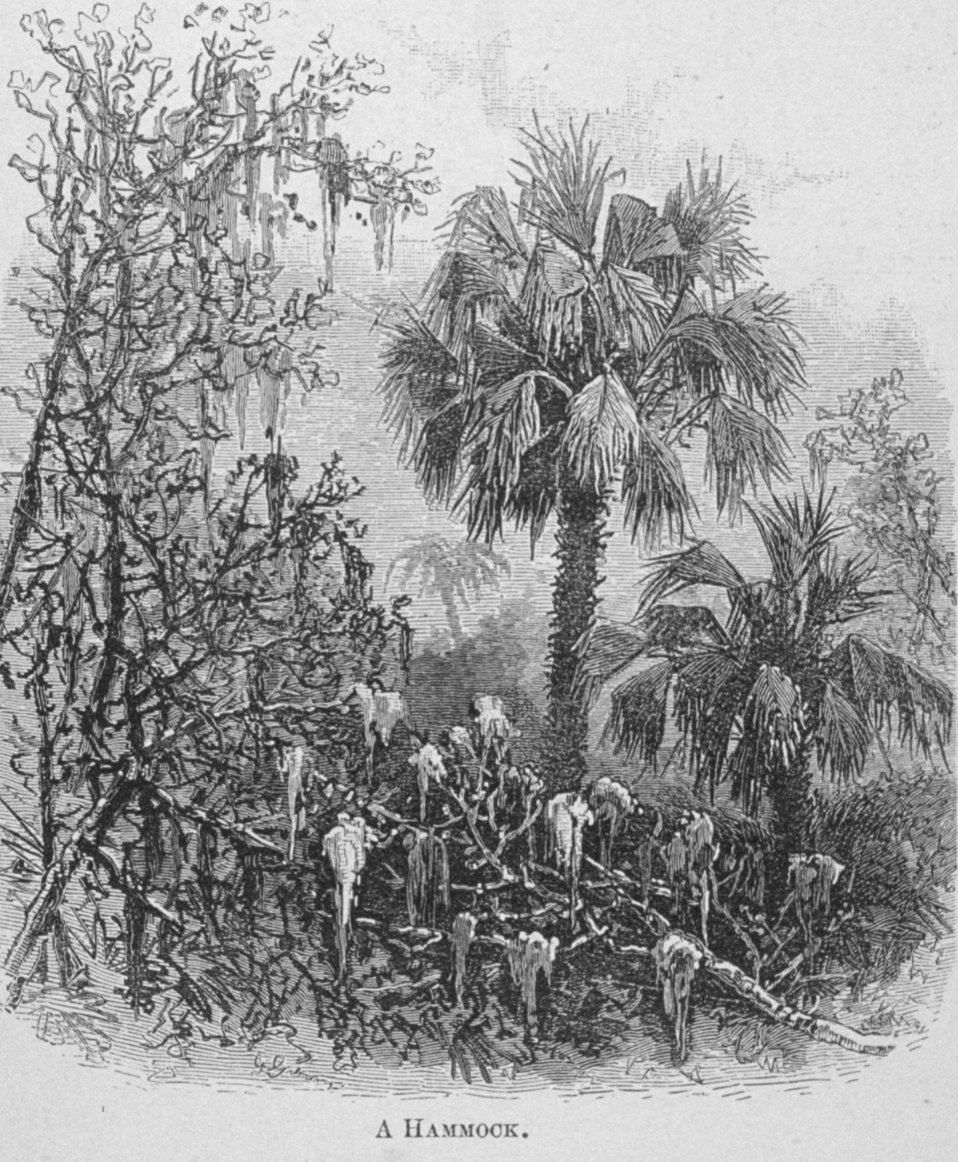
A Hammock - in 'Florida for Tourists, Invalids, and Settlers' by George M. Barbour, 1881. Library Call No. F316 .B23 1881. A hammock is a relatively high, dry area with fertile soil.